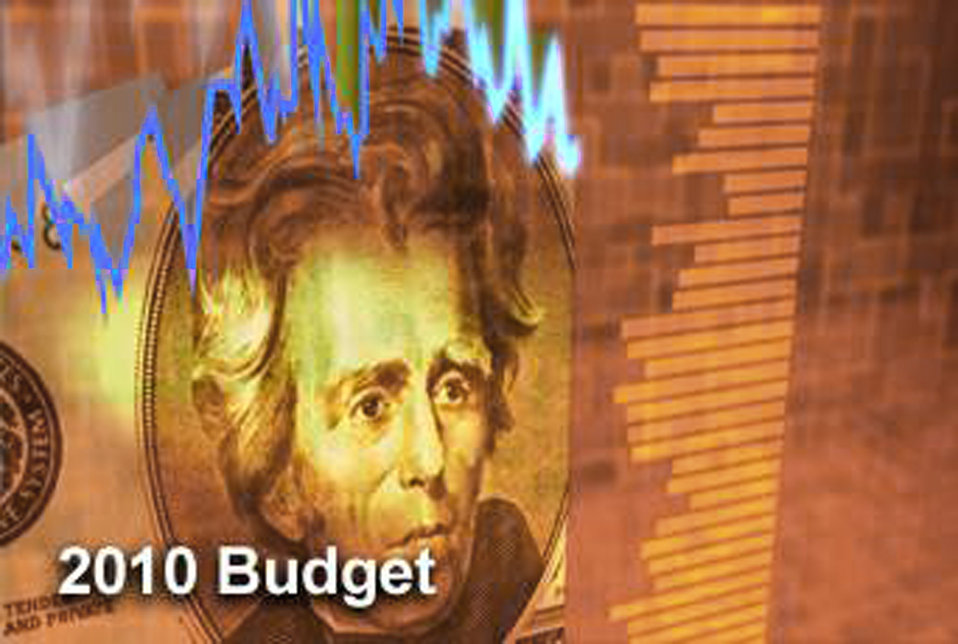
Air Force fiscal 2010 budget reflects rebalanced priorities

Air Force officials announced that its portion of the president's fiscal 2010 budget reflects a balanced strategy to prevail in today's joint fight and sustain air, space and cyberspace dominance.